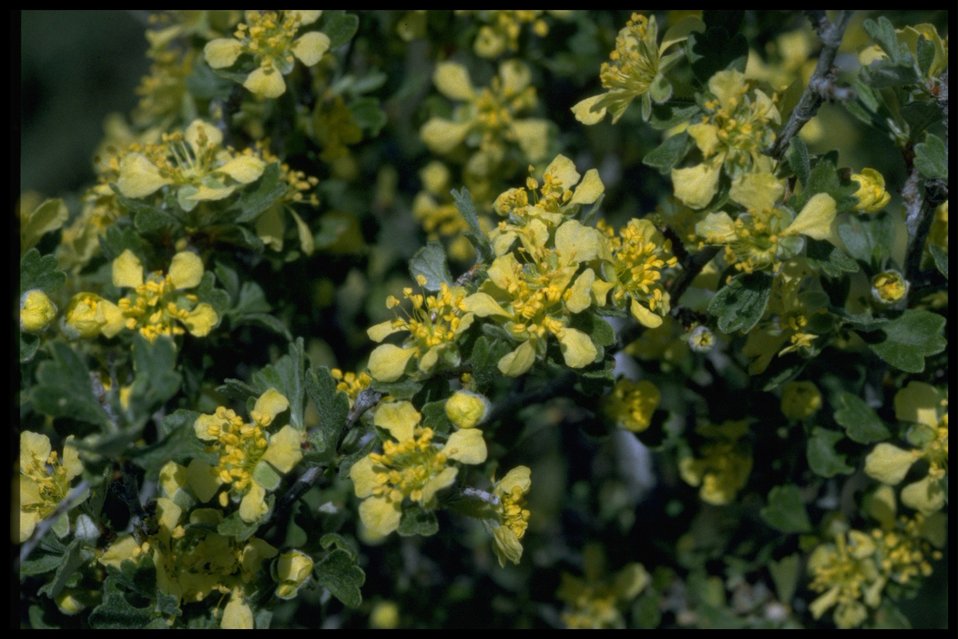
Closeup shot of Bitterbrush flowers.